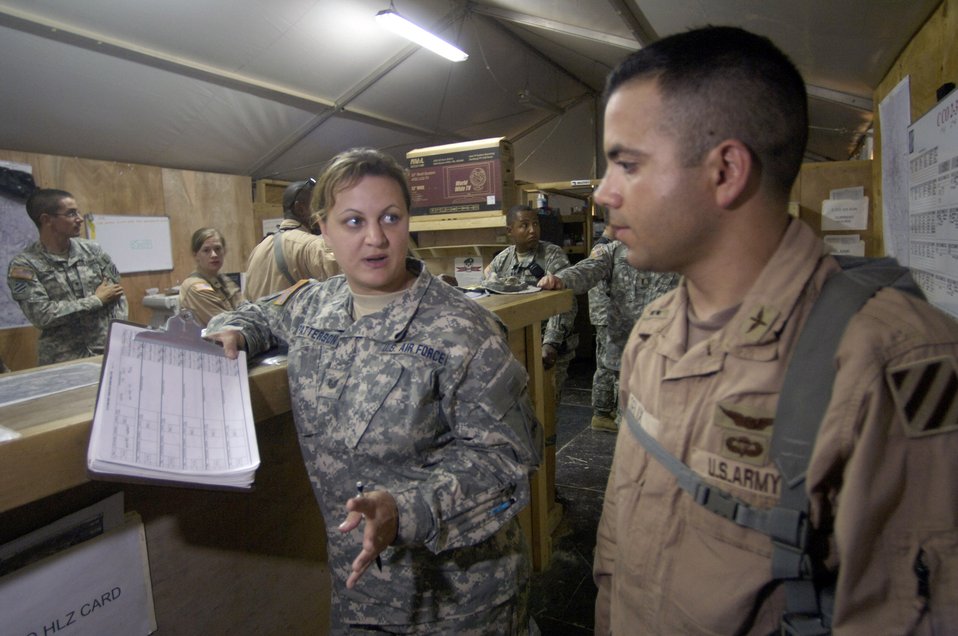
Weather team acclimates to mission in southern Baghdad

Tech. Sgt. Andrea Patterson (left) provides a weather brief in the 2nd Battalion, 3rd Combat Aviation Brigade, 3rd Infantry Division, tactical operations center to a UH-60 Blackhawk pilot prior to a medical evacuation mission June 23 at Forward Operating Base Kalsu, Iraq. Sergeant Patterson, and her fellow Air Force weather forecasters, provide 24 hour a day weather updates to the various U. S. Army 3rd Infantry Division's operations occurring in the Triangle of Death area. The instantaneous weather information the battlefield weathermen are able to provide are critical to the success, and to the safety of the 3rd ID's ground and aviation operations. Though Sergeant Patterson is attached to the 3rd ID, she officially falls under the recently formed 3rd Expeditionary Weather Squadron headquartered on Camp Victory in Iraq. She is deployed from Detachment 6 of the 7th Weather Squadron from Wiesbaden, Germany.